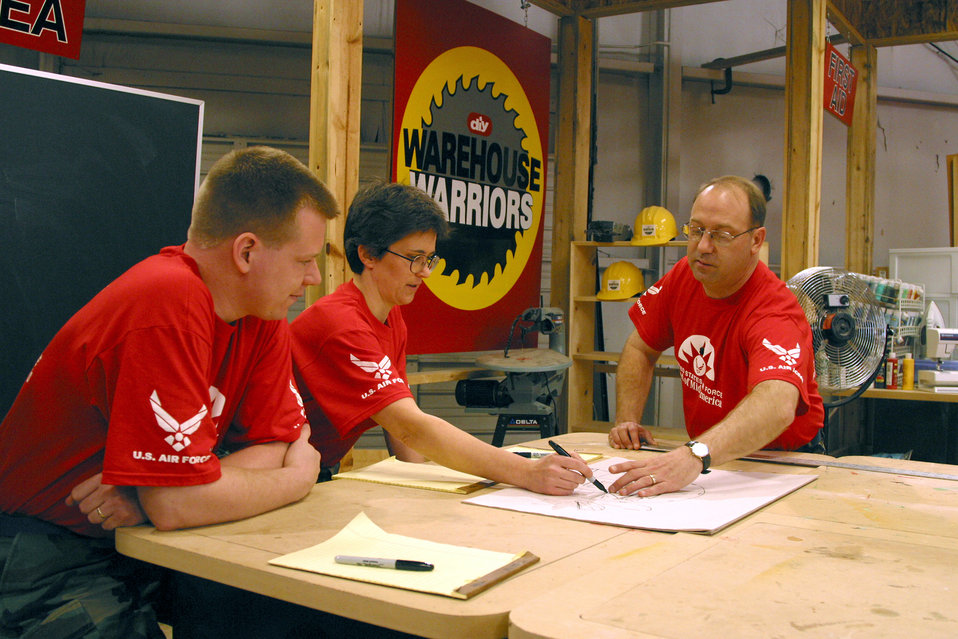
Planning phase

KNOXVILLE, Tenn. -- Members of the U.S. Air Force Band of Mid-America, (from left to right) Senior Airman Tom Money, Master Sgt. Connie Galbraith and Master Sgt. Paul Demerath, started their display case project by drafting design concepts. The Band of Mid-America, from Scott Air Force Base, Ill., and the U.S. Air Force Band of the Golden West, from Travis AFB, Calif., each sent a three-person team here April 4, to participate in the Do-It-Yourself Network television show, Warehouse Warriors.